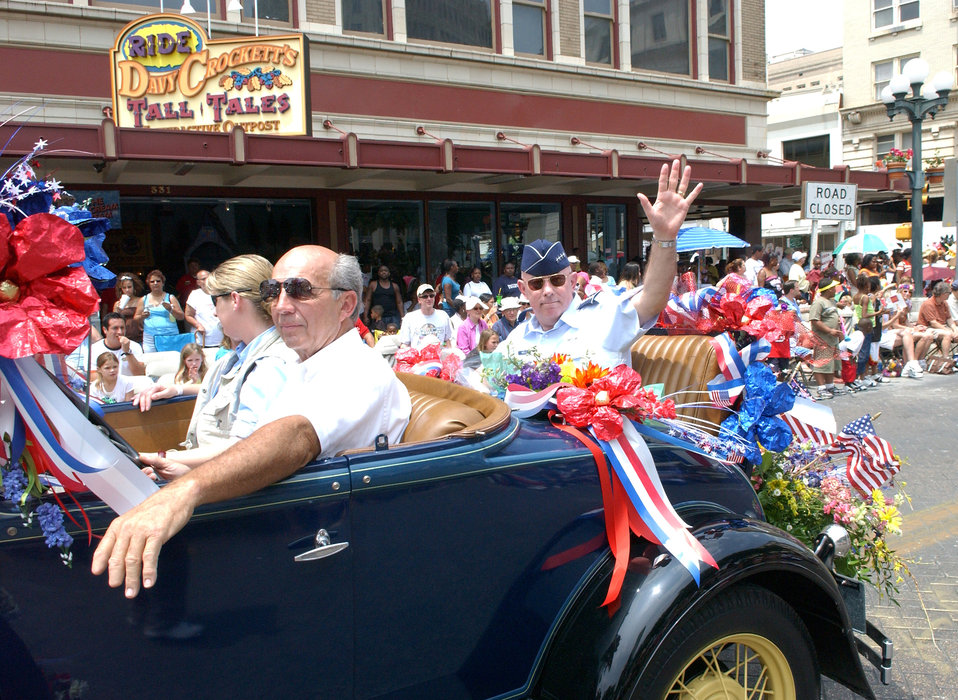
Viva Fiesta!

Gen. T. Michael Moseley, Air Force chief of staff, waves from the back of a Model A during the Fiesta Battle of Flowers parade on Friday, April 28, 2006. General Moseley was the parade grand marshall. This parade is one of several events during Fiesta, a 10-day celebration to honor the memory of the heroes of the Alamo and the Battle of San Jacinto in 1836.